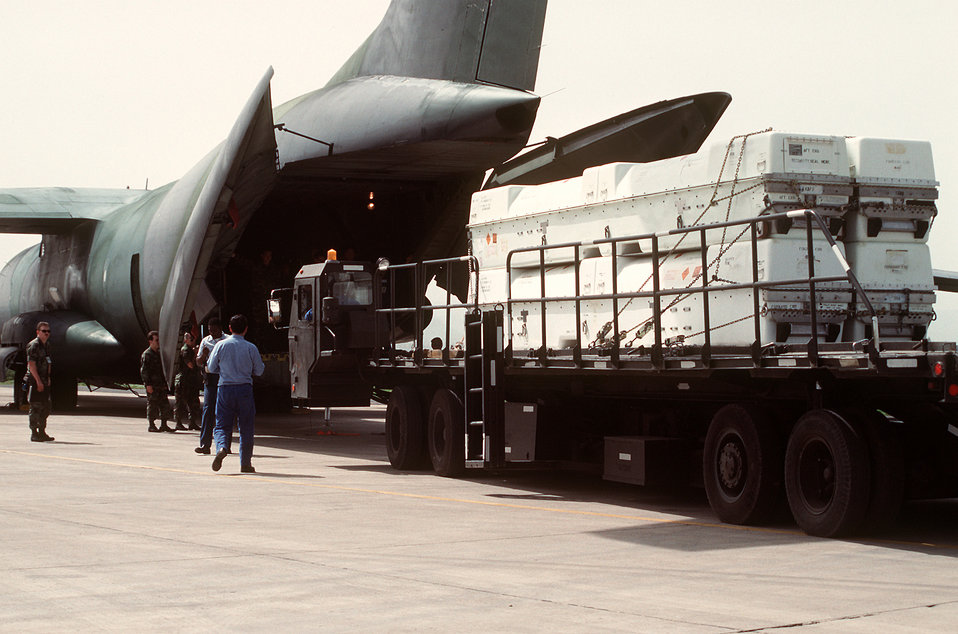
A K-Loader carrying BGM-109 Tomahawk cruise missiles approaches the loading ramp of a C-141B Starlifter aircraft. The Tomahawks are being flown back to the U.S. after being deployed during Operation Desert Storm.